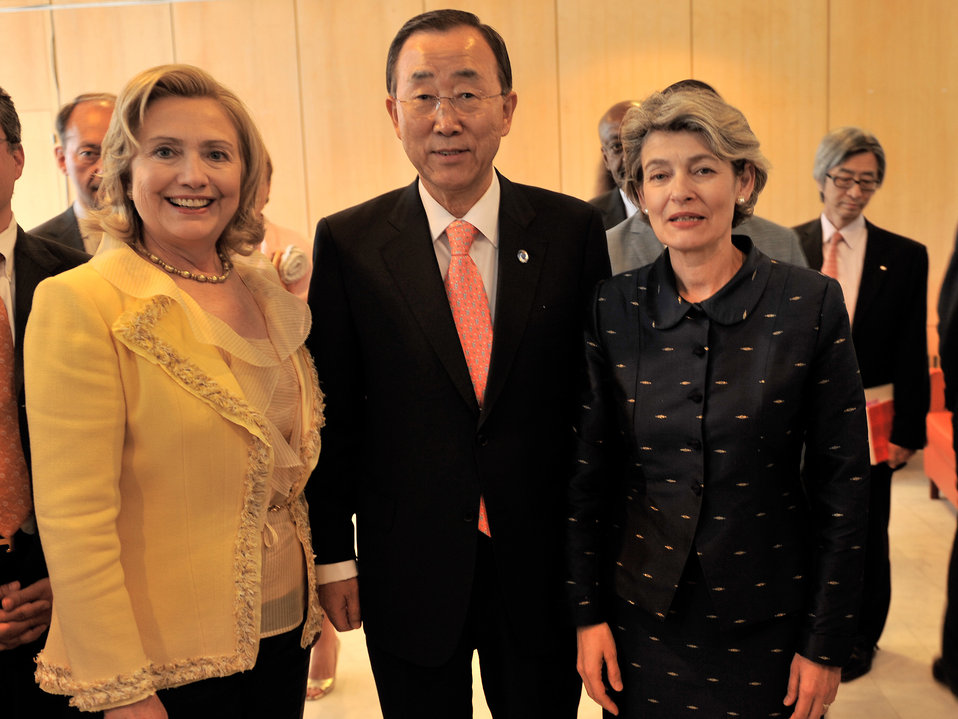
Secretary Clinton, UN Secretary-General Ban Ki-moon, and UNESCO Director-General Bokova Pose for a Photo

U.S. Secretary of State Hillary Rodham Clinton, UN Secretary-General Ban Ki-moon, and UNESCO Director-General Irina Bokova pose for a photo at the launch of UNESCO’s new Global Partnership for Girls’ and Women’s Education, in Paris, France, on May 26, 2011.